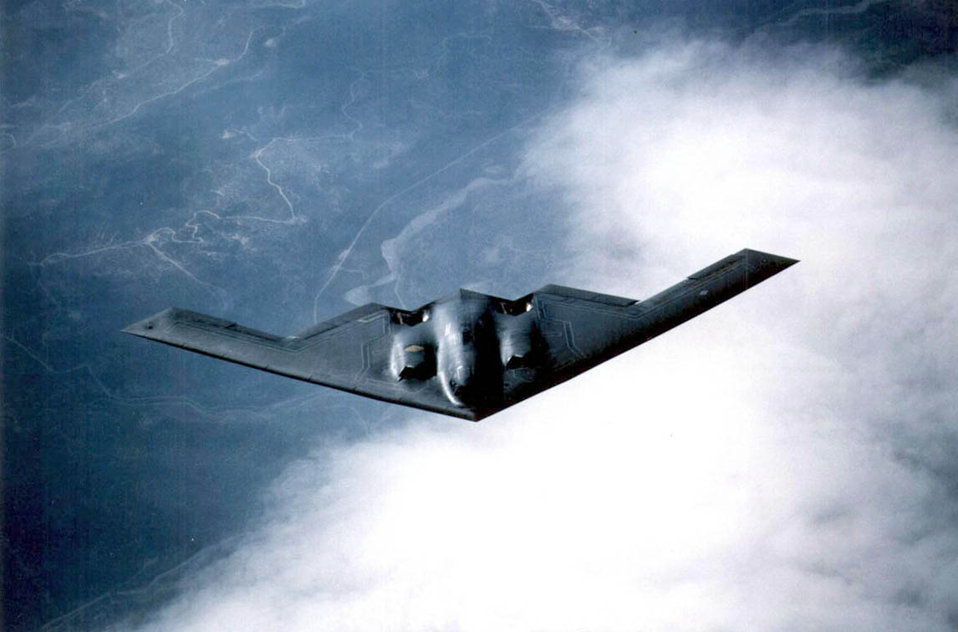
Blue skies ahead

A B-2 Spirit bomber supports NATO operations in 2002. Air Force B-2 Spirits are used to deliver Joint Direct Attack Munitions.